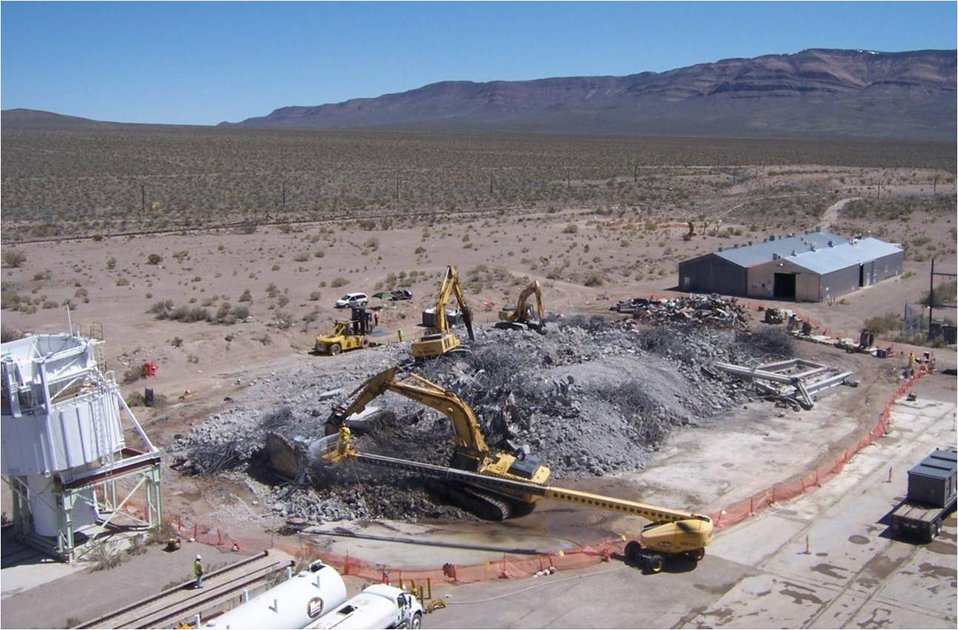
Recovery Act Bolsters Nevada National Security Site Environmental Cleanup

Recovery Act crews remove demolition debris at the Reactor Maintenance, Assembly, and Disassembly Facility.

Since 2009, more than $50 million from the Recovery Act has accelerated soil remediation, groundwater characterization, building demolition, and waste disposal at the Nevada National Security Site (NNSS), formerly the Nevada Test Site.